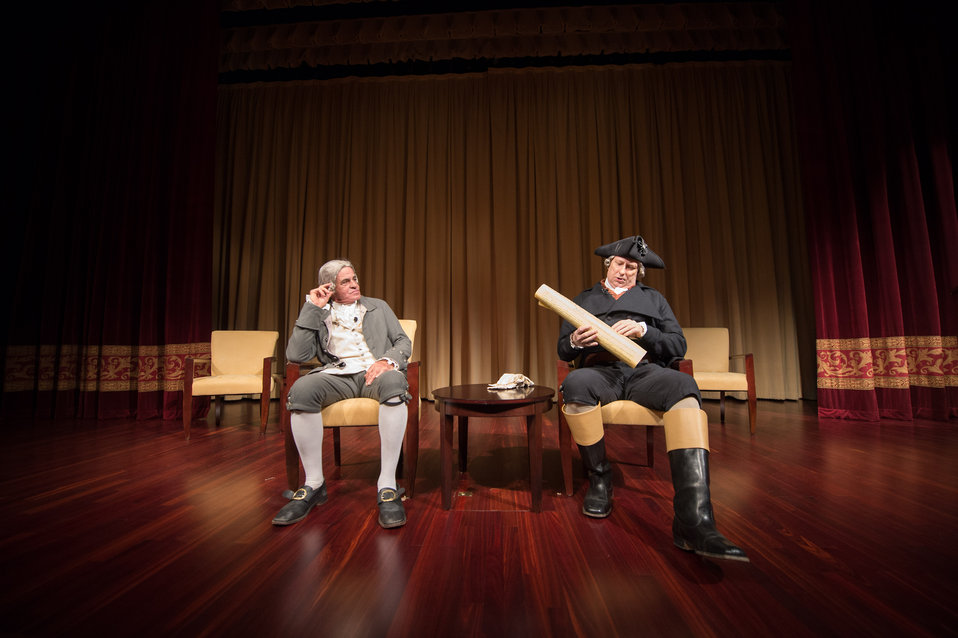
On stage

The reenactors perform a short skit about the signing of the Constitution